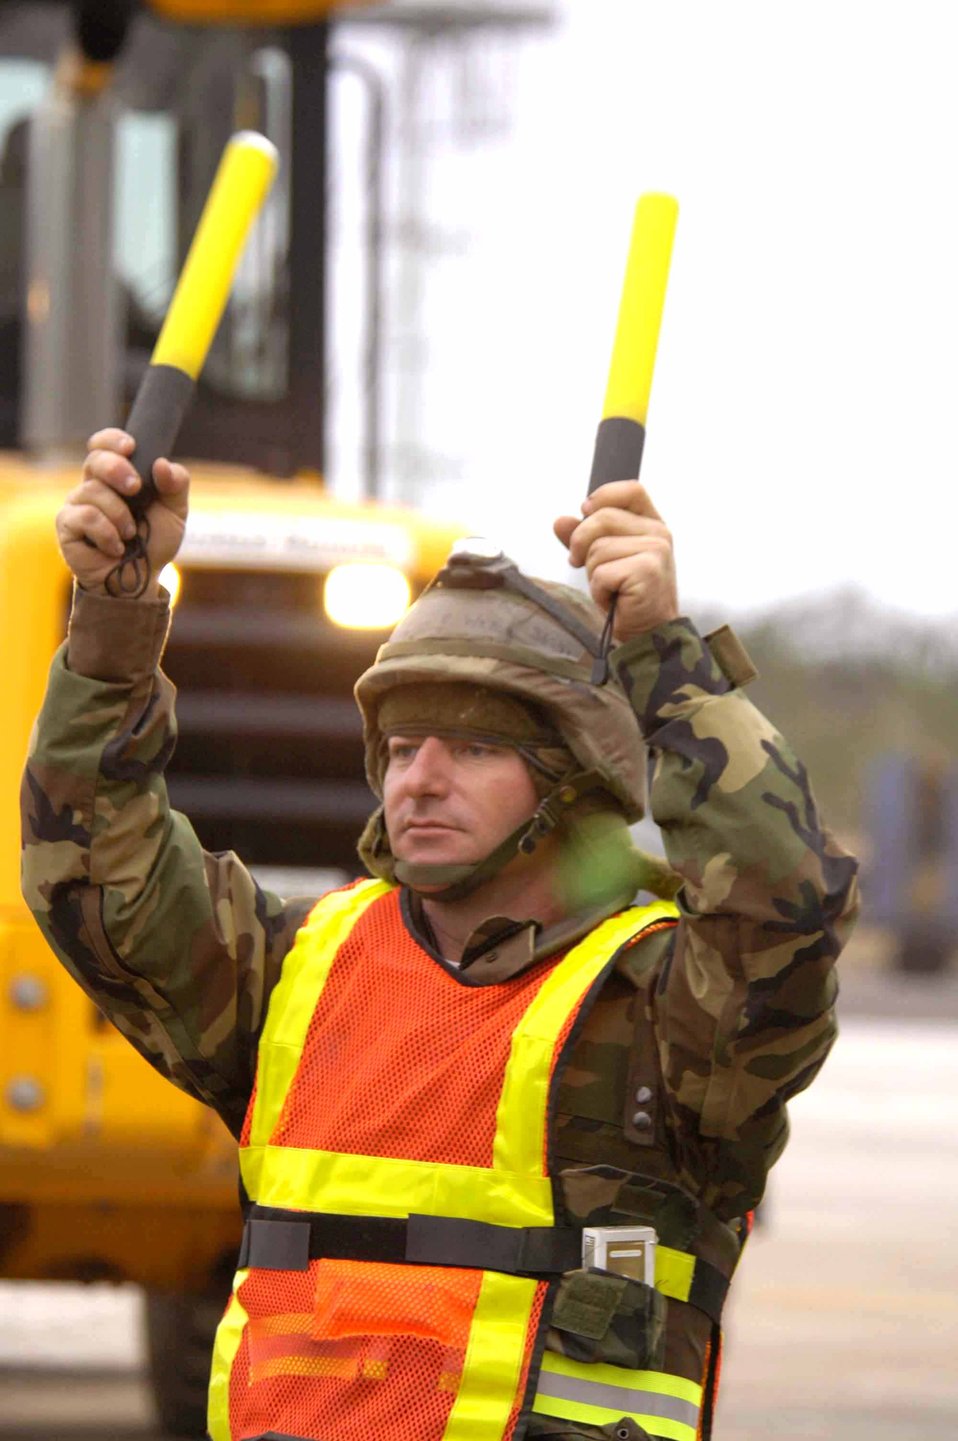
Airmen ready to rapidly repair runways

EGLIN AIR FORCE BASE, Fla. -- Staff Sgt. William Weber guides a truck during runway repairs here. He is the 796th Civil Engineer Squadron's noncommissioned officer in charge of the crater repair team.